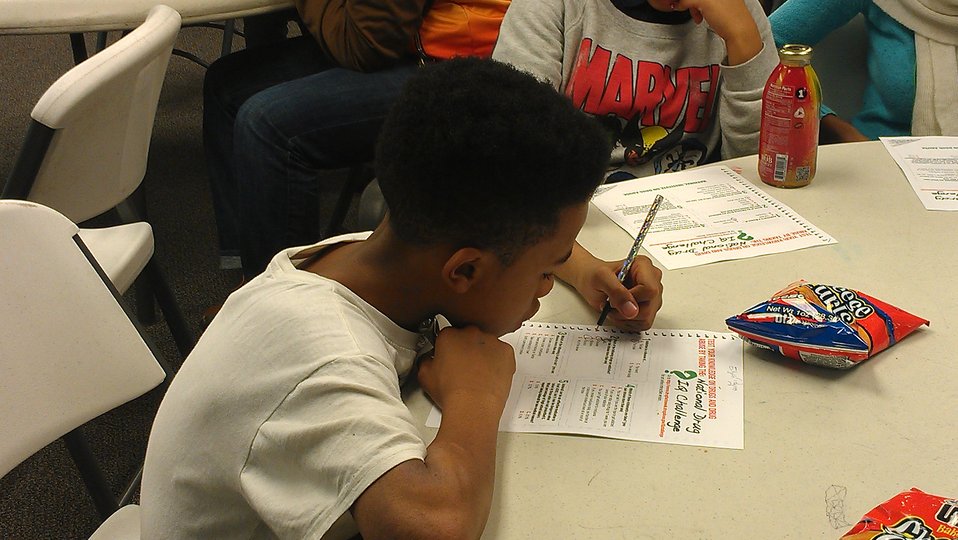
Washington, D.C. Youth, NDFW 2013

Sasha Bruce Youthwork, Inc. sponsor 2013 NDFW events for youth in Prevention Centers in Wards 5 & 6, Washington, D.C.